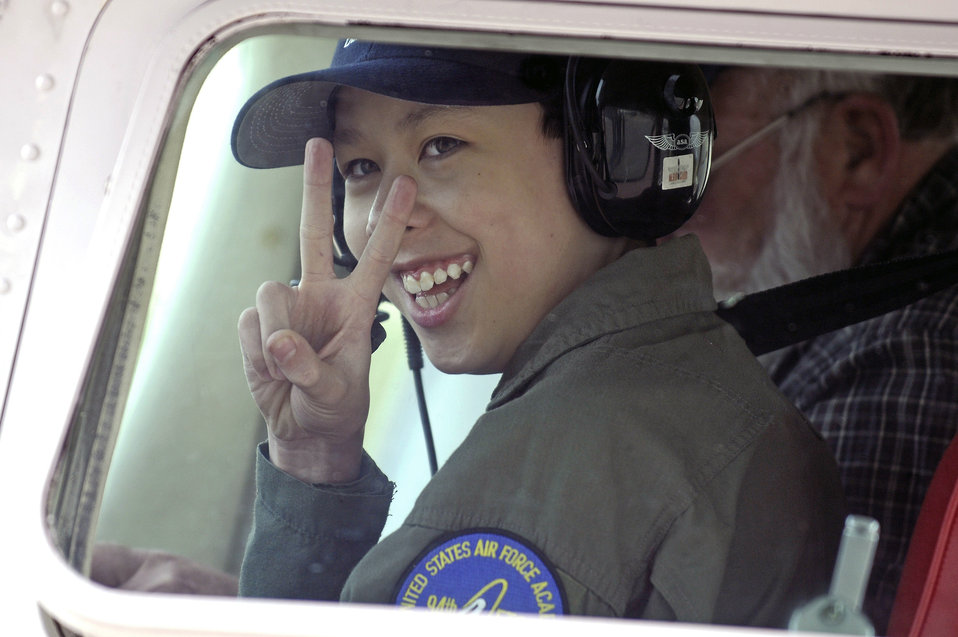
Clouds lift for 'Cadet for a Day'

Cadet for a Day Joe Hayford signals to his family as he prepares for an aero club flight during his visit to the Air Force Academy April 10. Organized through the Make-A-Wish Foundation, Joe was sponsored by cadet squadron 4 during his visit.